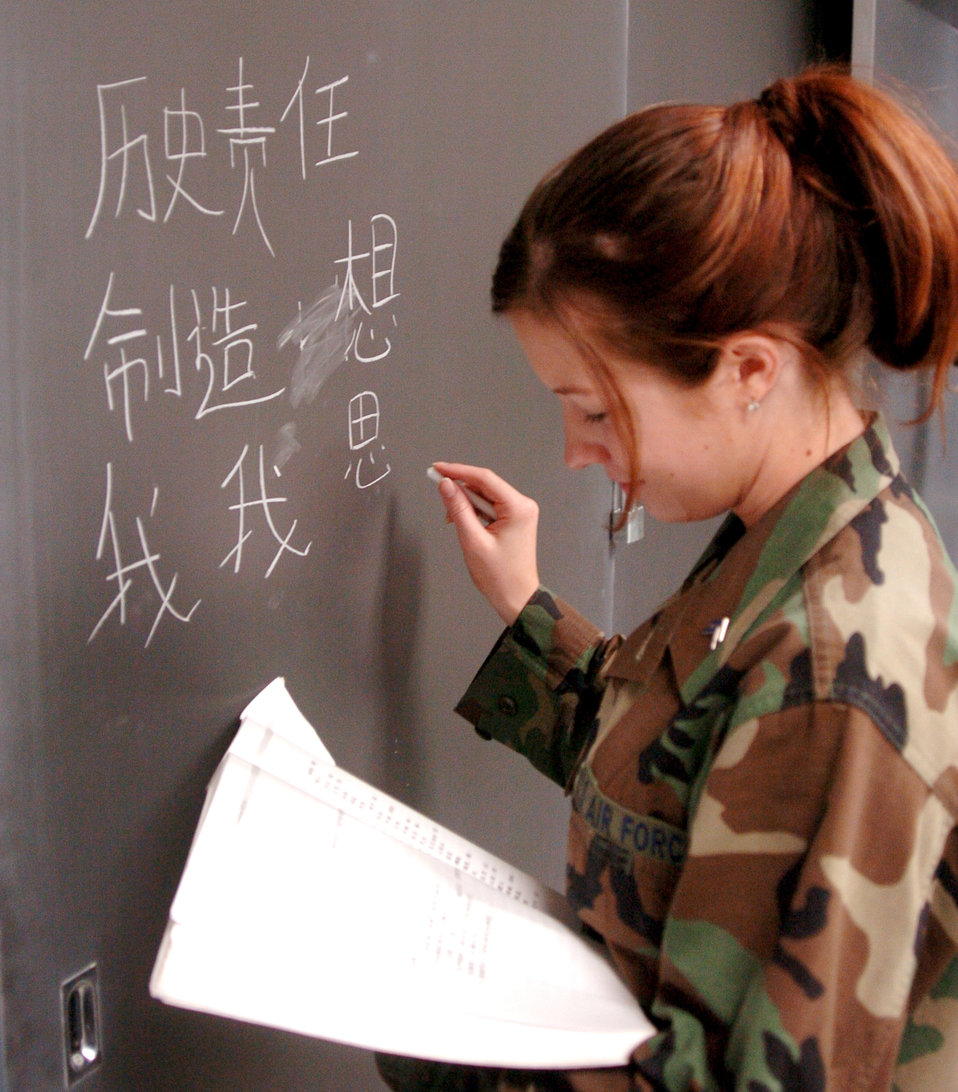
Language, cultural studies gain more focus

A cadet at the U.S. Air Force Academy works through a blackboard exercise in Chinese. All three U.S. military academies are putting new emphasis on language and regional studies coursework to help their graduates as they deploy around the world.